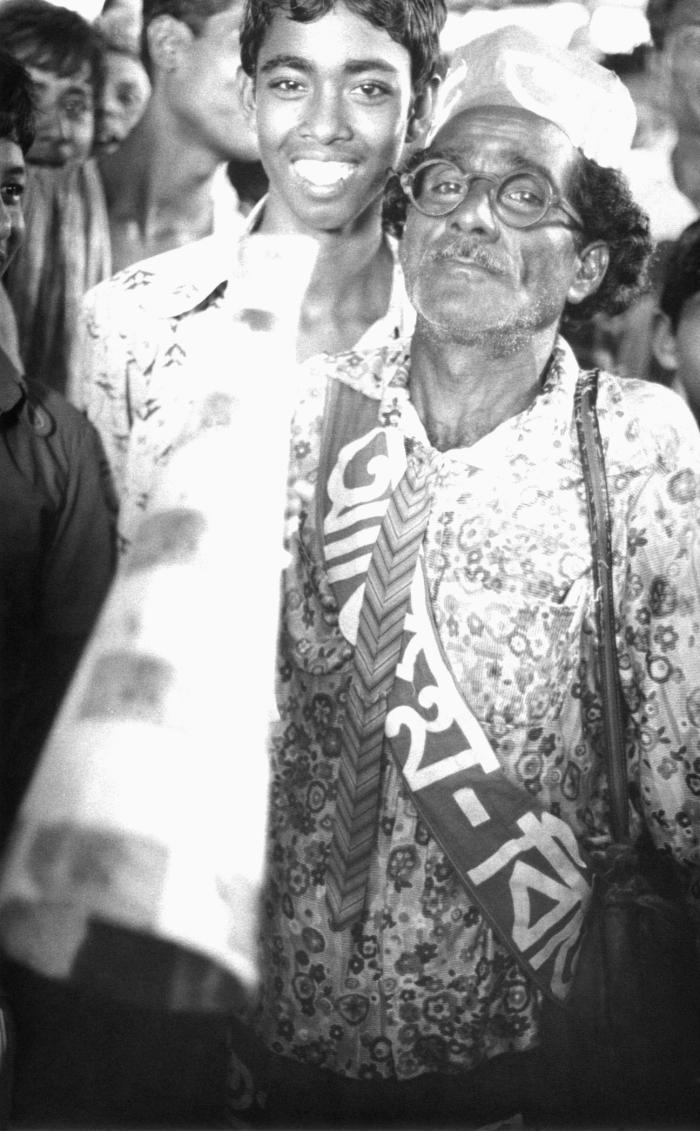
These two Bangladeshi villagers posed for a picture taken by Pierre Claquin, M.D., B.A.C., who at the time was a member of the World Health Organization's Smallpox Eradication Program. The elder man on the right was a public announcer for the local townspeople. The image was part of a series photographed by former E.I.S. officer, Stanley O. Foster M.D., M.P.H., and was one of a series entitled 'The Story of One Smallpox Jeep', which depicted the travails faced by the jeep, and its occupants of public health practitioners, as they road through the Bangladesh countryside in an attempt to eradicate smallpox from the country.